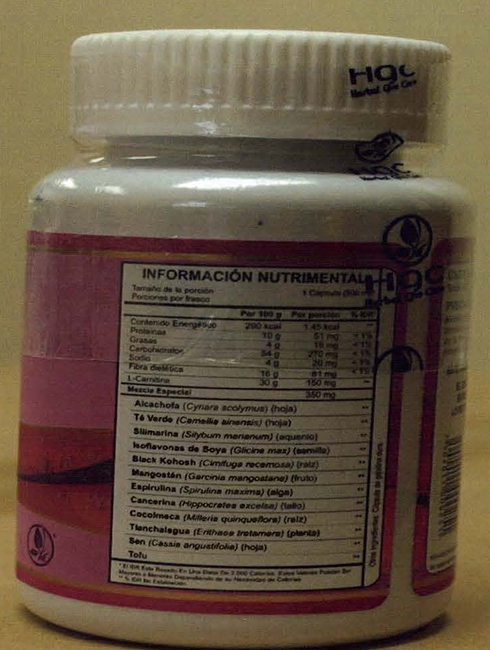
RECALLED – Dietary Supplement

August 16, 2013 – Product Recall – Herbal Give Care LLC Issues Voluntary Nationwide Recall of Esbelder Man Capsules, Esbelder Fem Capsules, and Esbelder Siloutte Capsules Vitamin Supplements Due to Potential Health Risks.